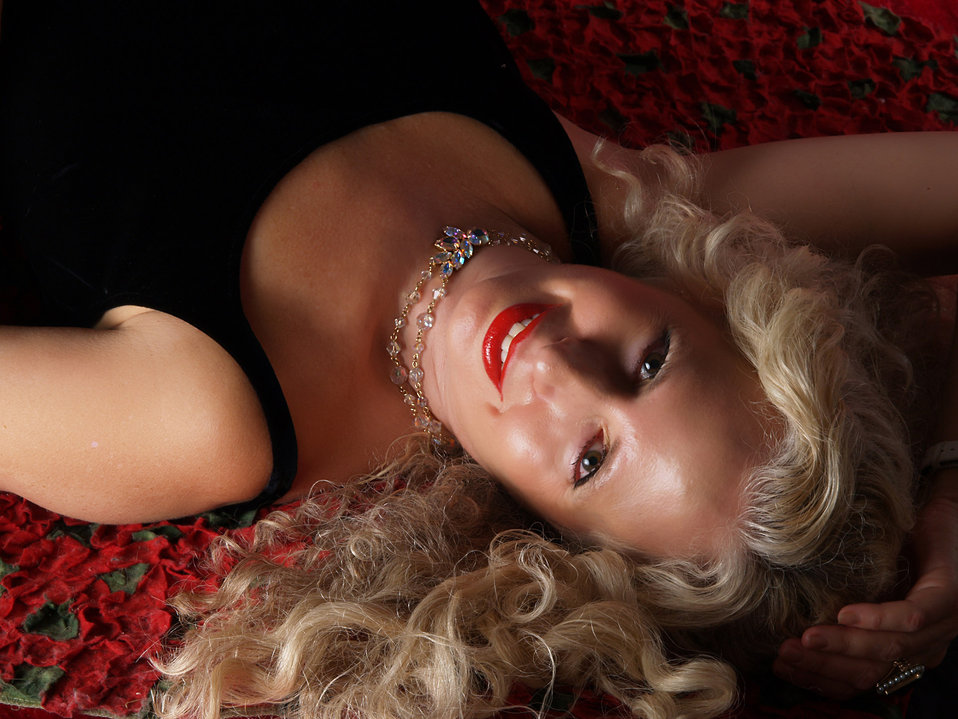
Woman on bed of roses

Striking pose of a blonde woman on a bed of roses.